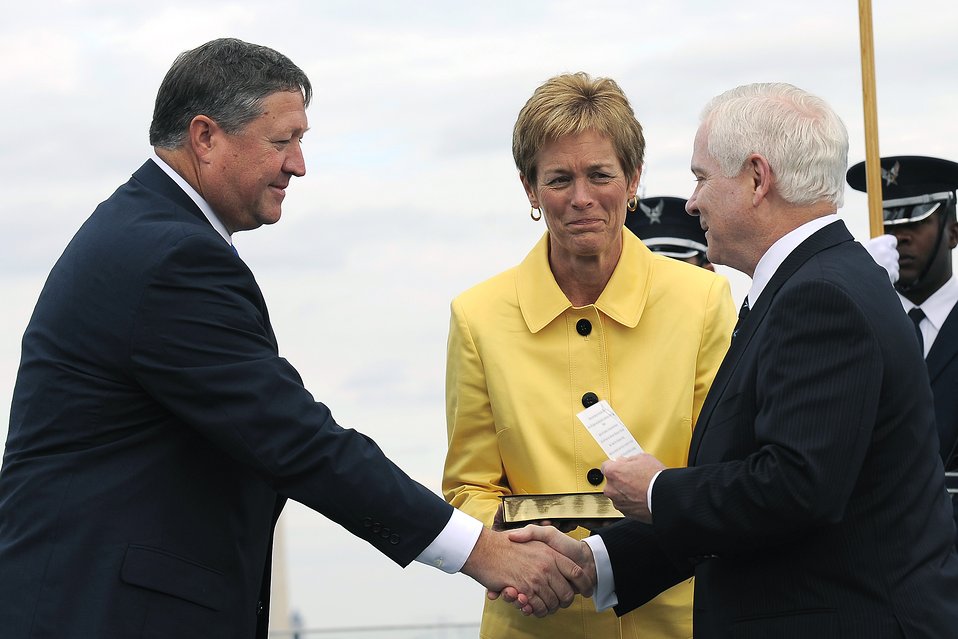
Secretary of Defense Robert M. Gates

U.S. Defense Secretary Robert M. Gates congratulates Secretary of the Air Force Michael B. Donley as his wife, Gail Donley, looks on after his swearing in ceremoney at the Air Force Memorial in Arlington, Va., Oct. 17.